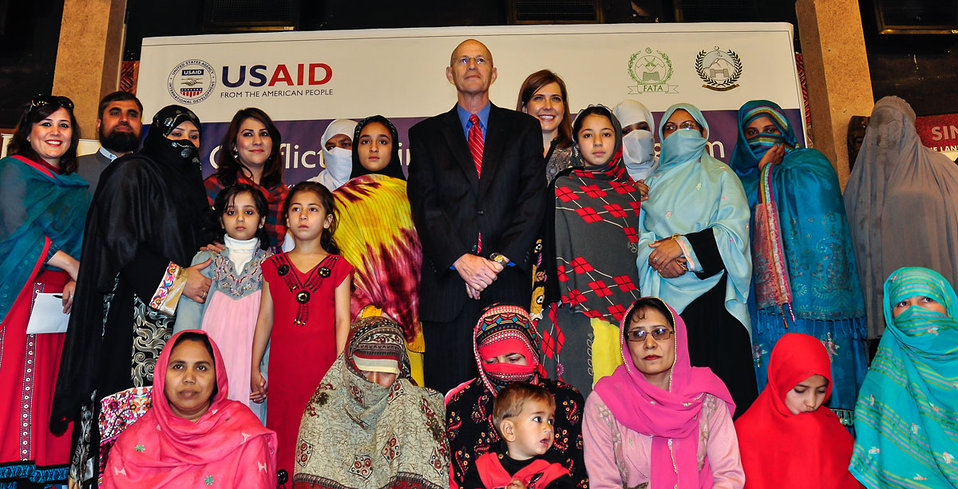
USAID Conflict Victims Support Program

Islamabad, March 7, 2014 - USAID Mission Director, Gregory Gottlieb, in a group photo with women from Khyber Pakhtunkhwa and FATA who received vocational training through the USAID Conflict Support Program to improve their incomes.